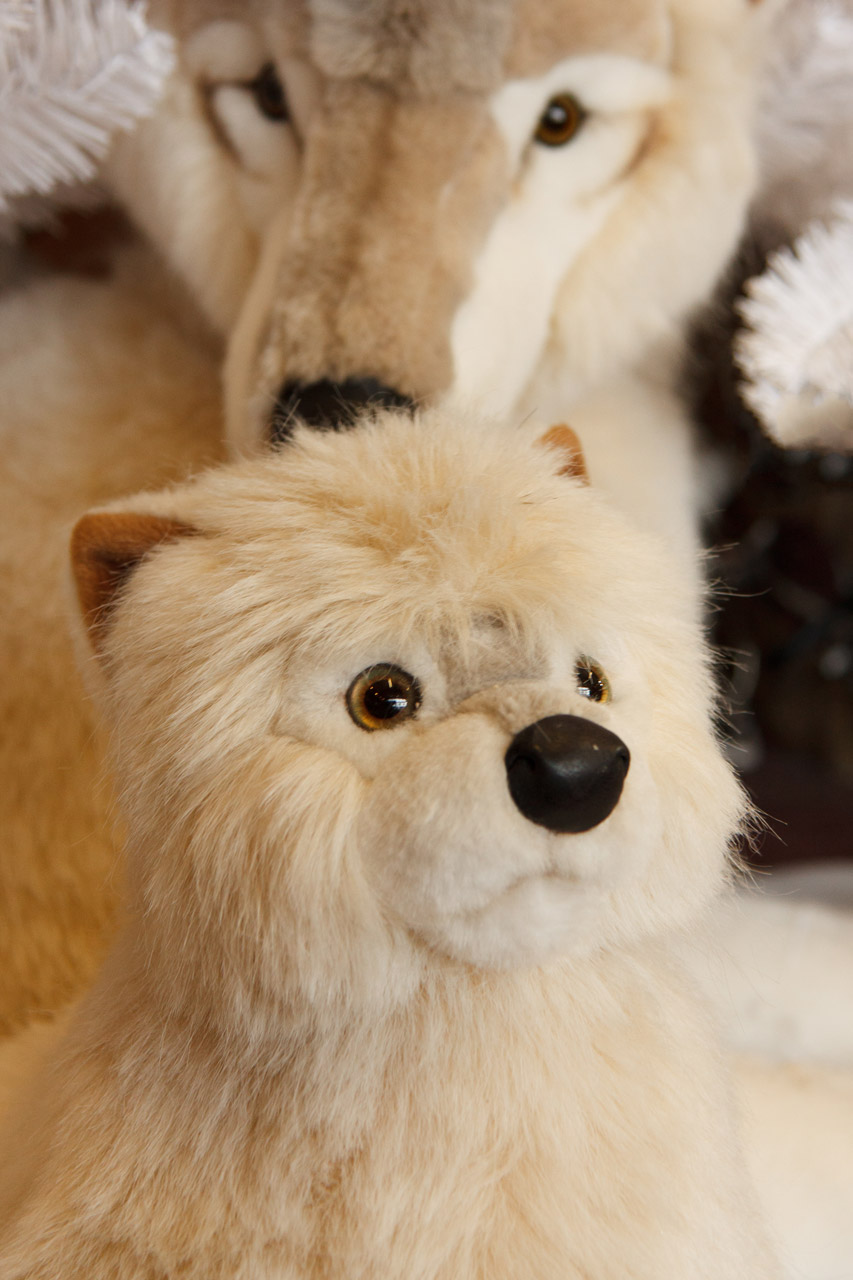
Arctic baby wolf christmas decoration.